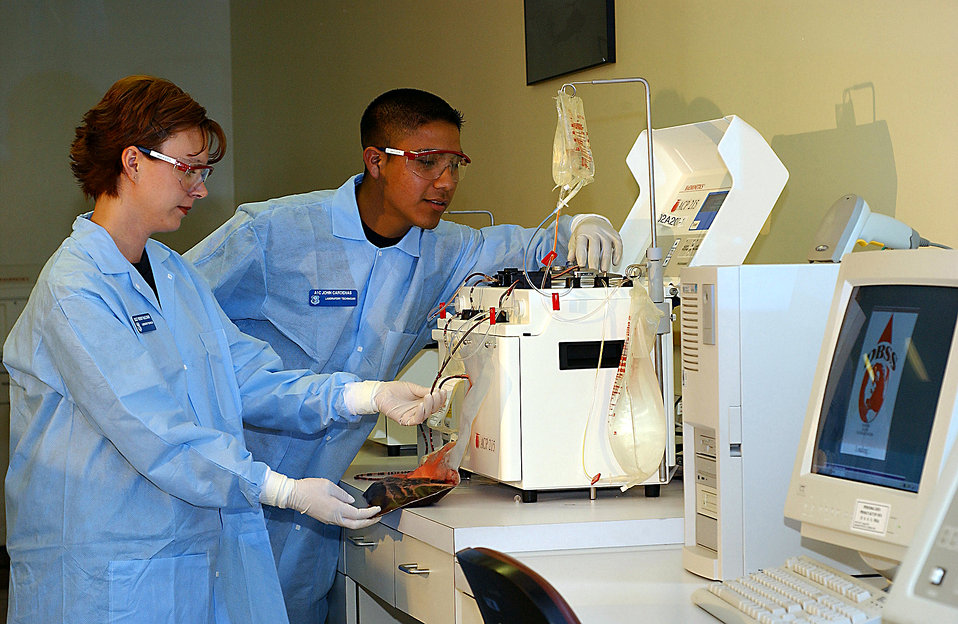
Frozen blood

TRAVIS AIR FORCE BASE, Calif. -- Staff Sgt. Wendy McElwain and Airman 1st Class John Cardenas practice using the new frozen blood-processing machine at the Armed Services Whole Blood Processing Lab here. The lab is one of the first in the medical industry to use the new technology.